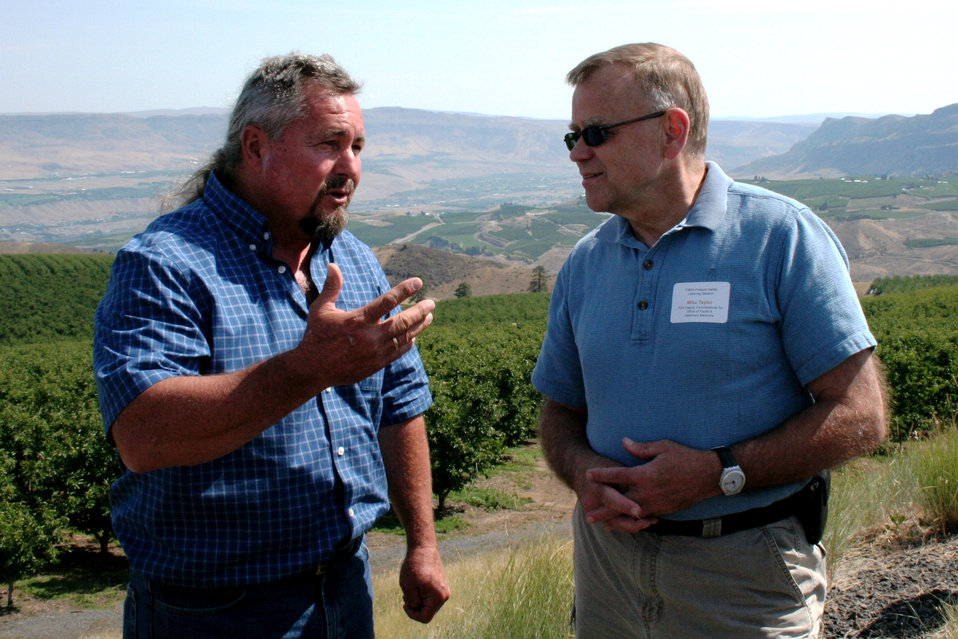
On the Road with Mike Taylor

FDA Deputy Commissioner Michael Taylor (right) talks with Kyle Mathison of Stemilt Growers in Wenatchee, WA. Mike and colleagues started a five-day tour of the Pacific Northwest on Sunday, Aug. 11, 2013 -- visiting Idaho, Oregon and Washington -- to get a first-hand look at produce production and irrigation operations, and to discuss the proposed Produce Safety Rule with growers, food industry representatives and state officials. For more about Mike's multi-region tour, read these FDA Voice blog posts:

• Hearing the Concerns of Maine Growers Striving for Agricultural Diversity
• On the Road with Mike Taylor: Touring the Pacific Northwest
• On the Road with Mike Taylor, Day 2: Frank Talk in Farm Country
• On the Road with Mike Taylor, Day 3: Families and Partnerships
• On the Road with Mike Taylor, Day 4: Looking to the Future